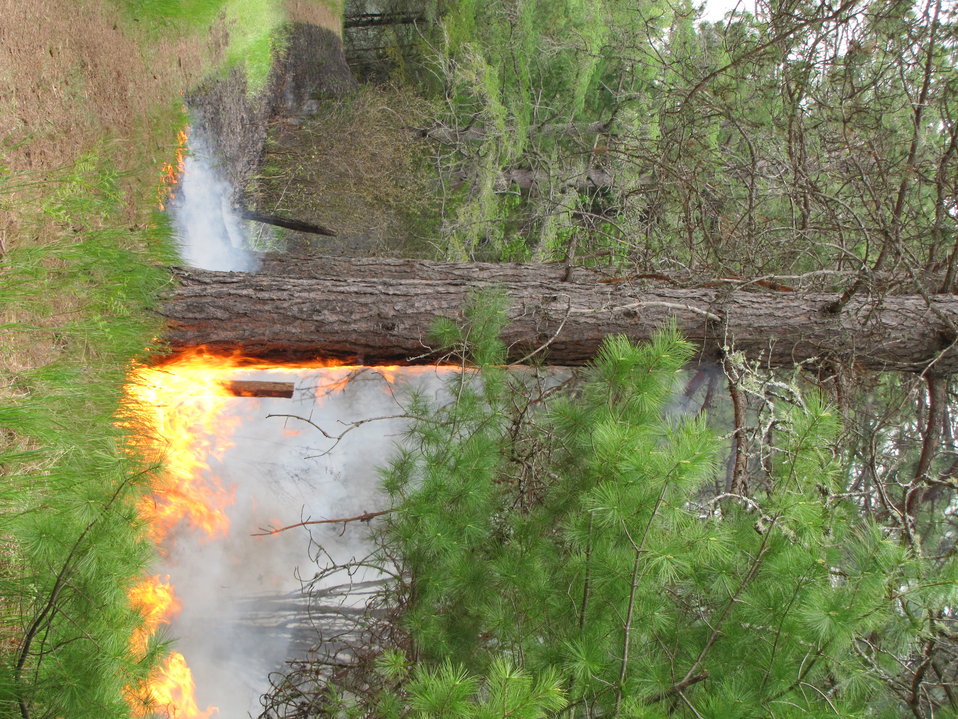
The Back fire

Lighting a back fire off Pine Creek Road to keep the main fire contained and off the path.